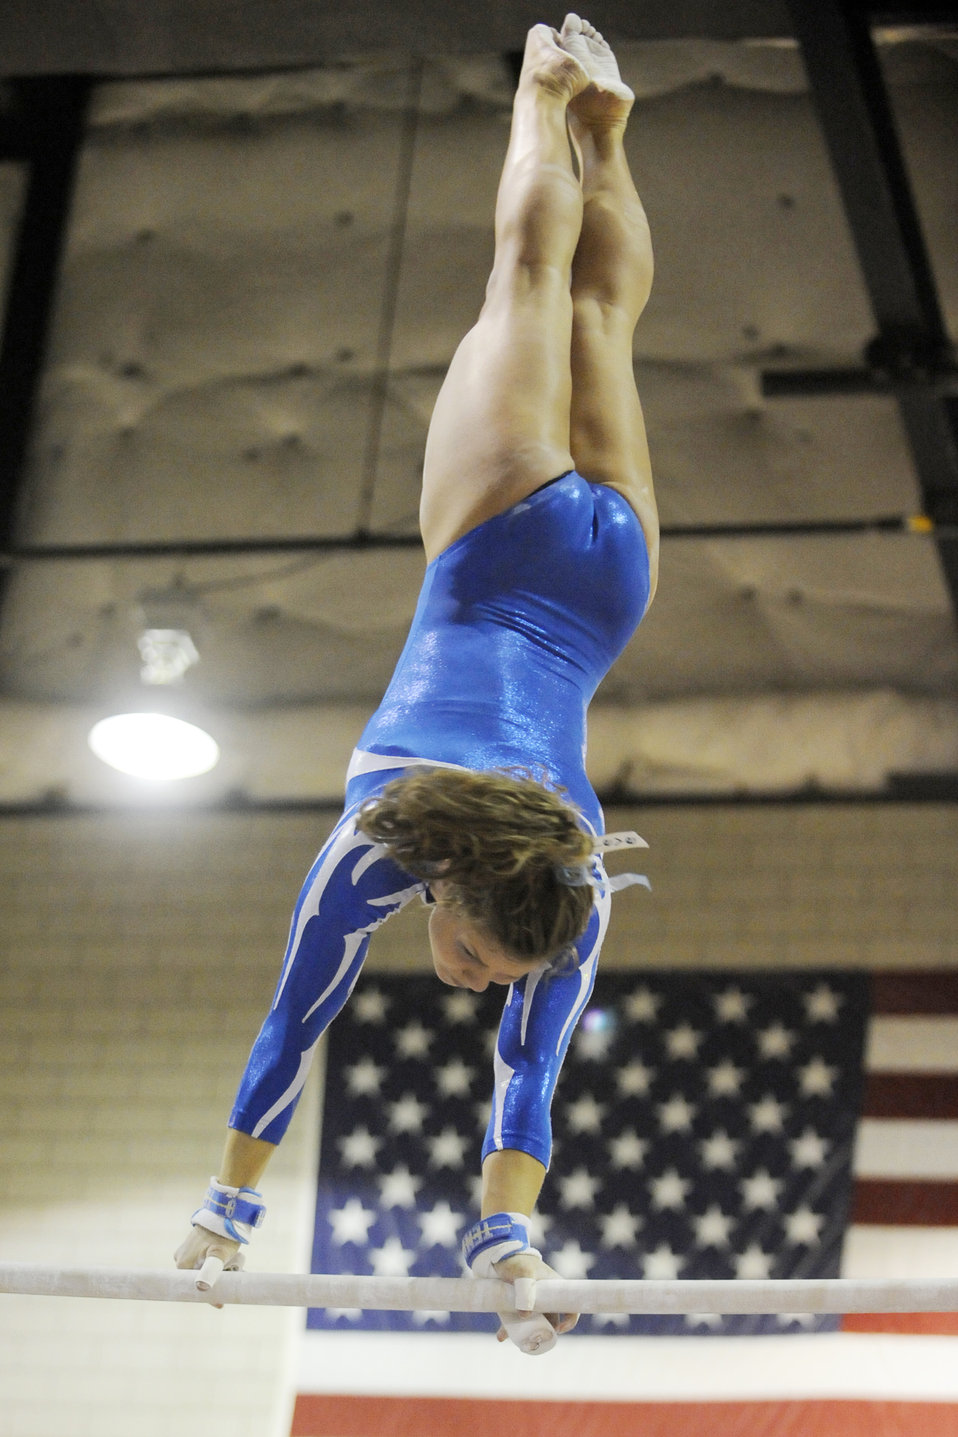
Falcon gymnasts compete against UC Davis

U.S. Air Force Academy junior Brittany Dutton competes on the uneven bars during Air Force's meet against University of California Davis Jan. 30, 2010, in the Cadet Gymnasium. Air Force lost the meet 191.575 to 185.300.